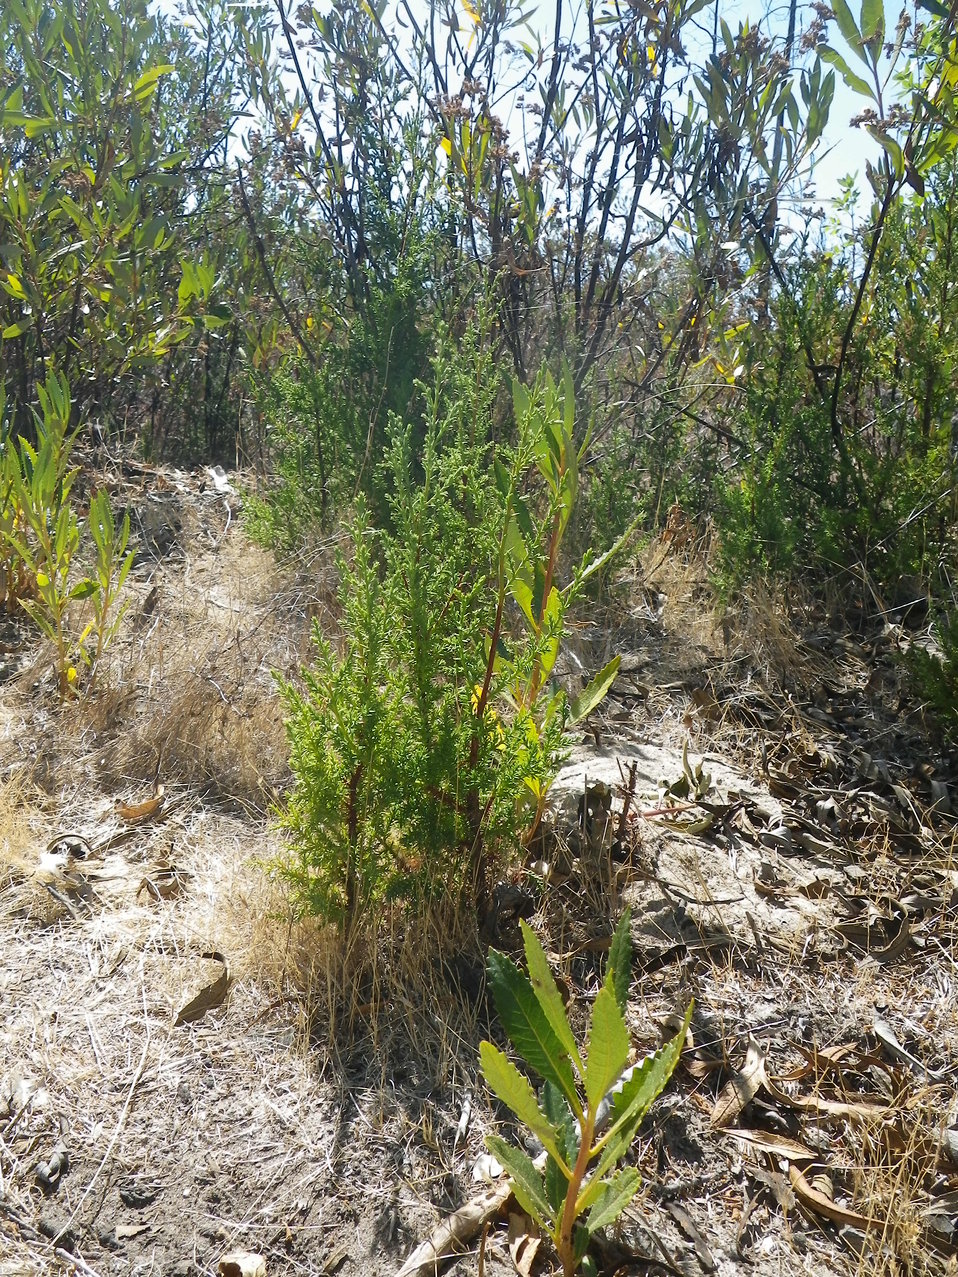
Santa Cruz Cypress Saplings

These Santa Cruz cypress (Hesperocyparis abramsiana) saplings are part of the Bonny Doon population located within the Bonny Doon State Ecological Reserve, Santa Cruz County, California.